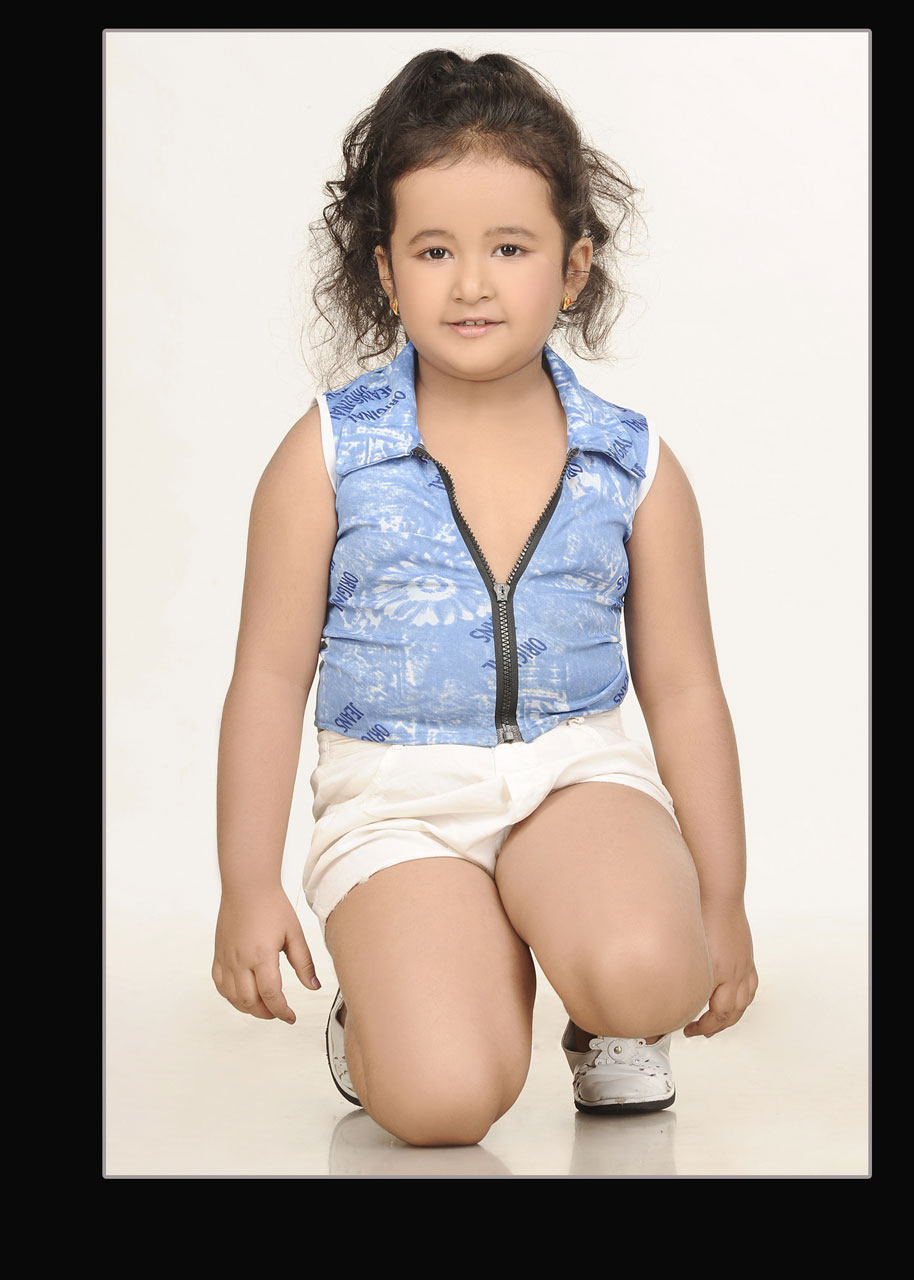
Dona roy tariang. dona is a jolly girl from guwahati. born to a jaintia mother and bengali father, dona is a little jolly girl..